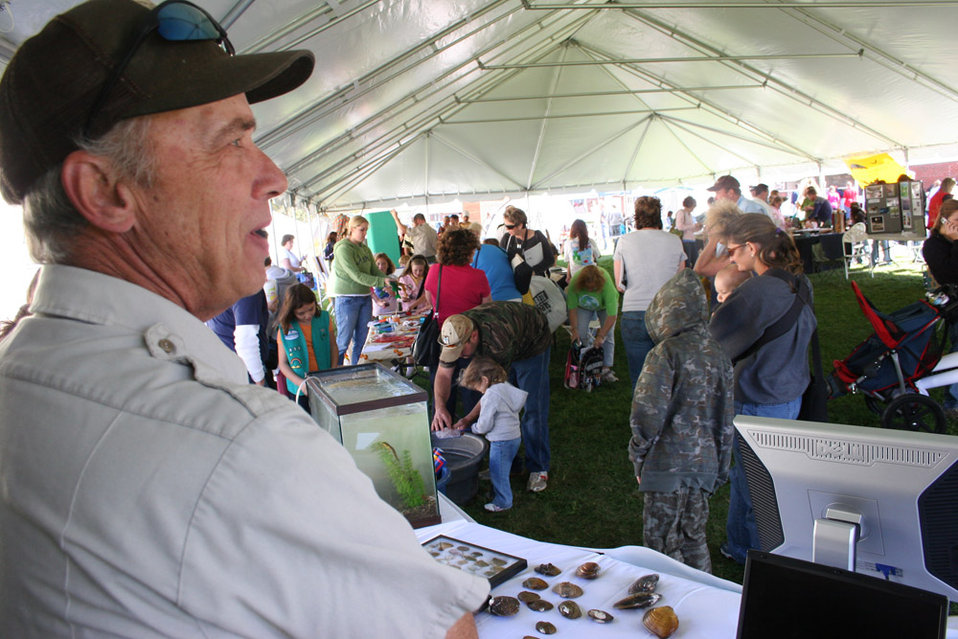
Freshwater Folk Festival

The 5th Annual Freshwater Folk Festival at White Sulphur Springs National Fish Hatchery in West Virginia.